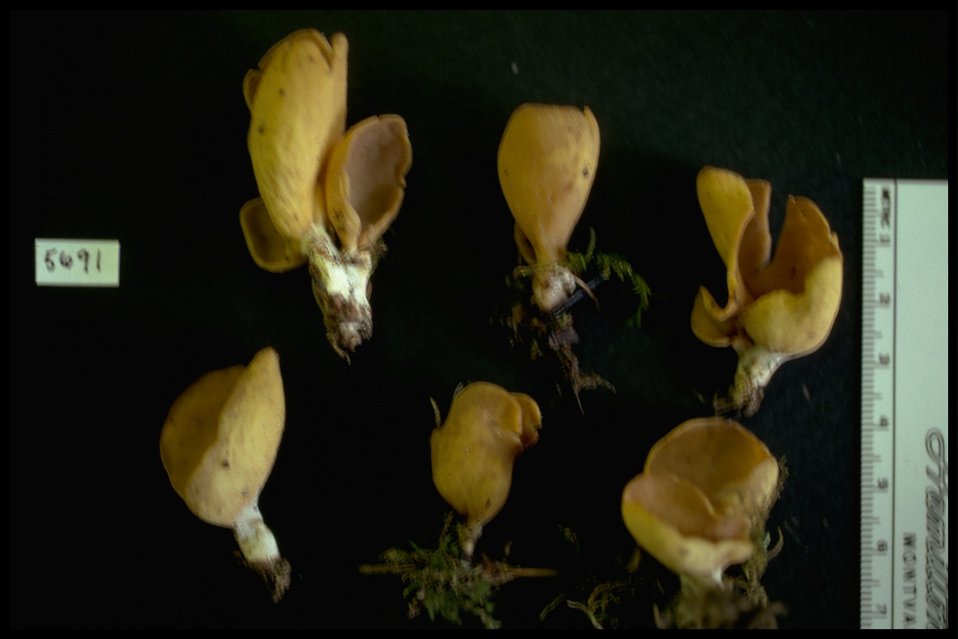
Otidea leporina, commonly known as Rabbit Ears.